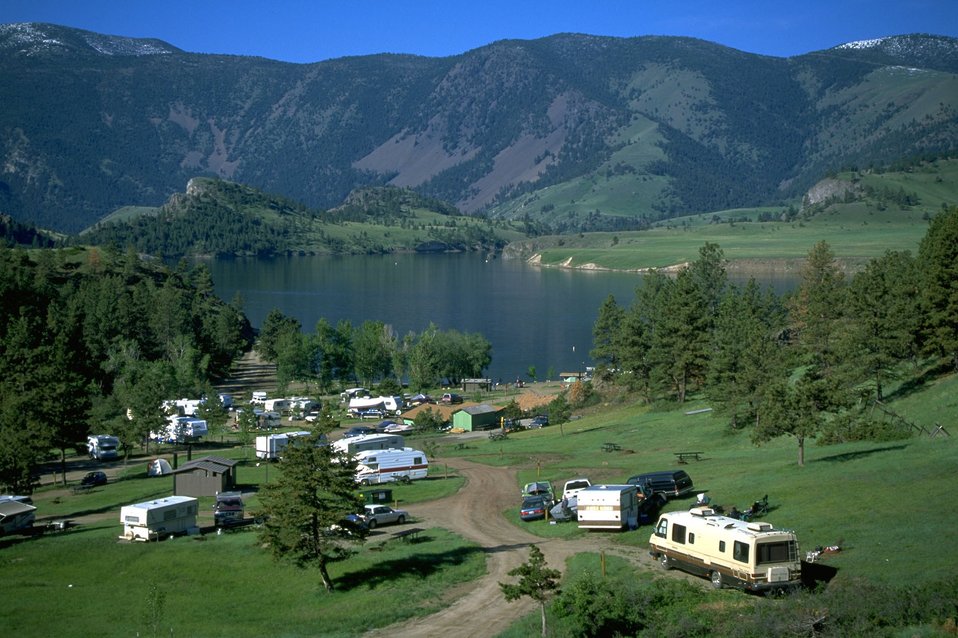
Scenic view of Log Gulch Campground, Holter Lake, and Mountains in the background